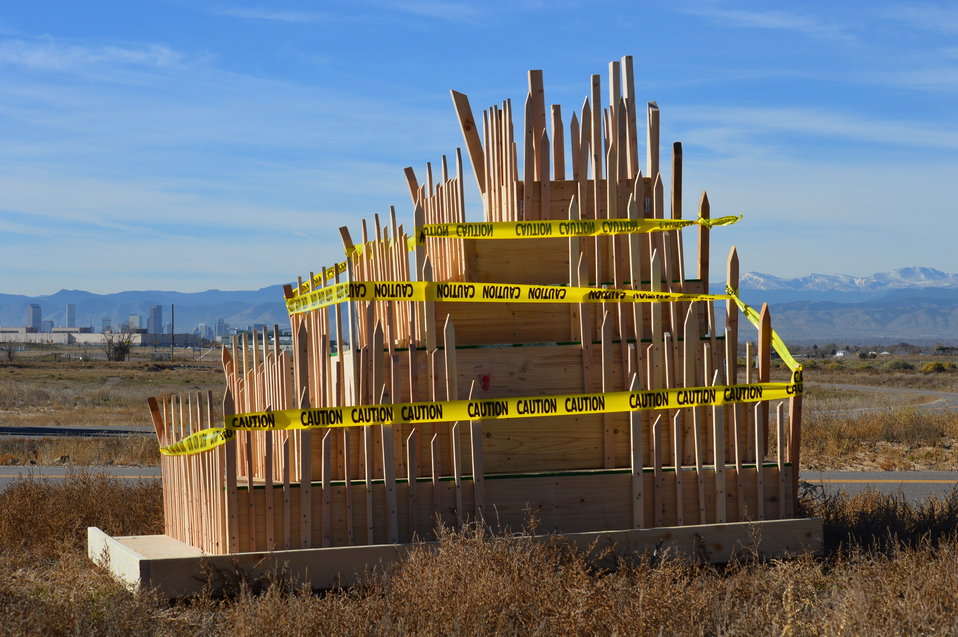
Tower where poached ivory tusks will be displayed before crushing.